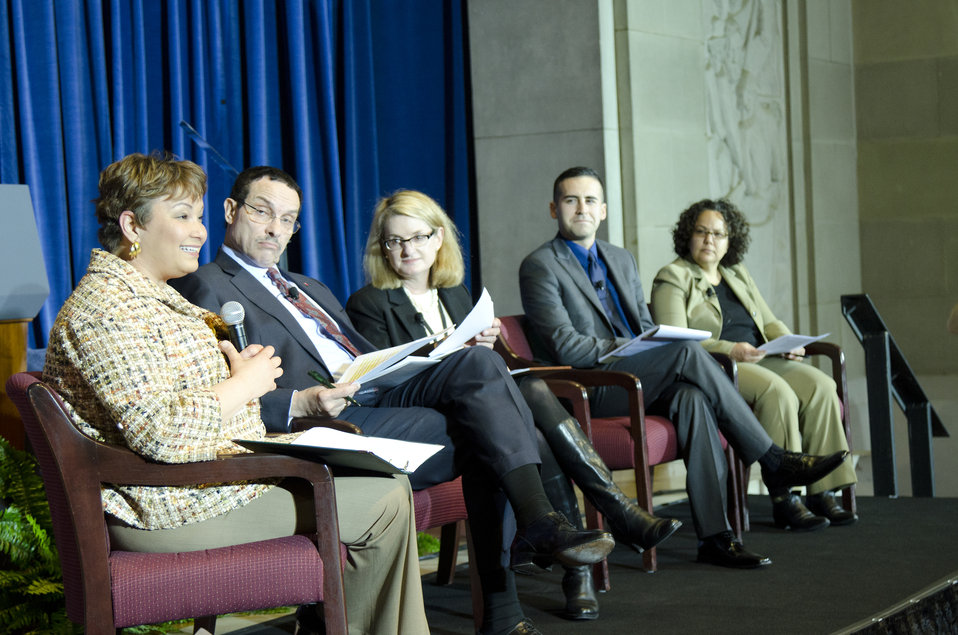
(L to R) Environmental Protection Agency Administrator Lisa Jackson, Washington, D.C. Mayor Vincent Gray, Hampton, VA, Mayor Molly Ward, a Park Guide from the Santa Monica Mountains National Recreation Area Thousand Oaks, California Juan Quezada, and Chair, White House Council on Environmental Quality Nancy Sutley participated in the, “Renewing Communities: Connecting People to Nearby Open Spaces” panel during the White House Conservation conference, “Growing America’s Outdoor Heritage and Economy” at the Interior Department, Yates Auditorium in Washington, D.C., on Friday, March 2, 2012. The conference was part of President Barrack Obama’s, “America’s Great Outdoors Initiative” to spotlight community-driven conservation efforts and discussed how to build their success.